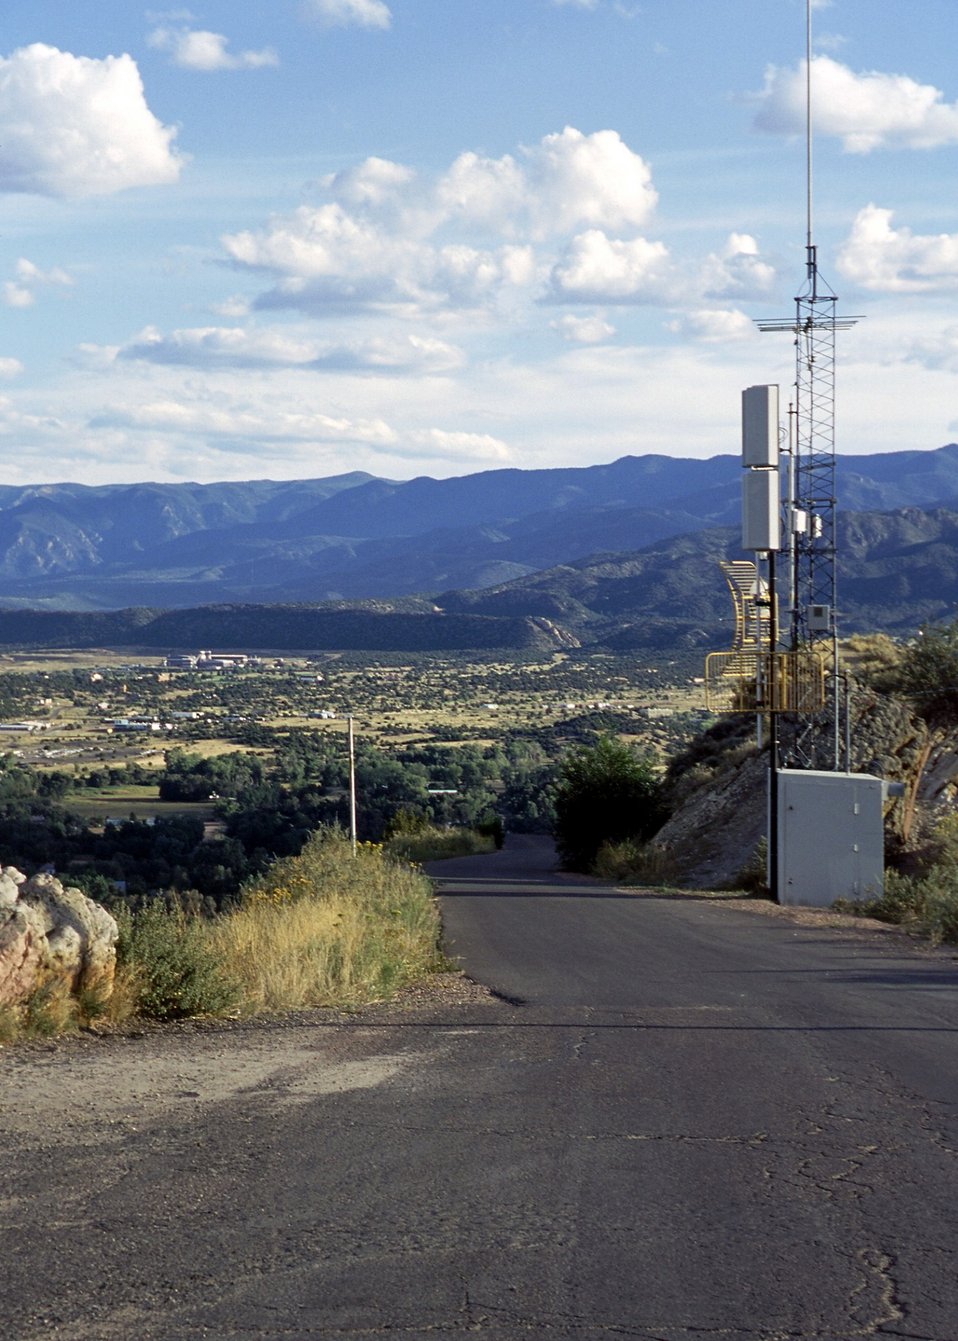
Skyline Drive Weather Monitior